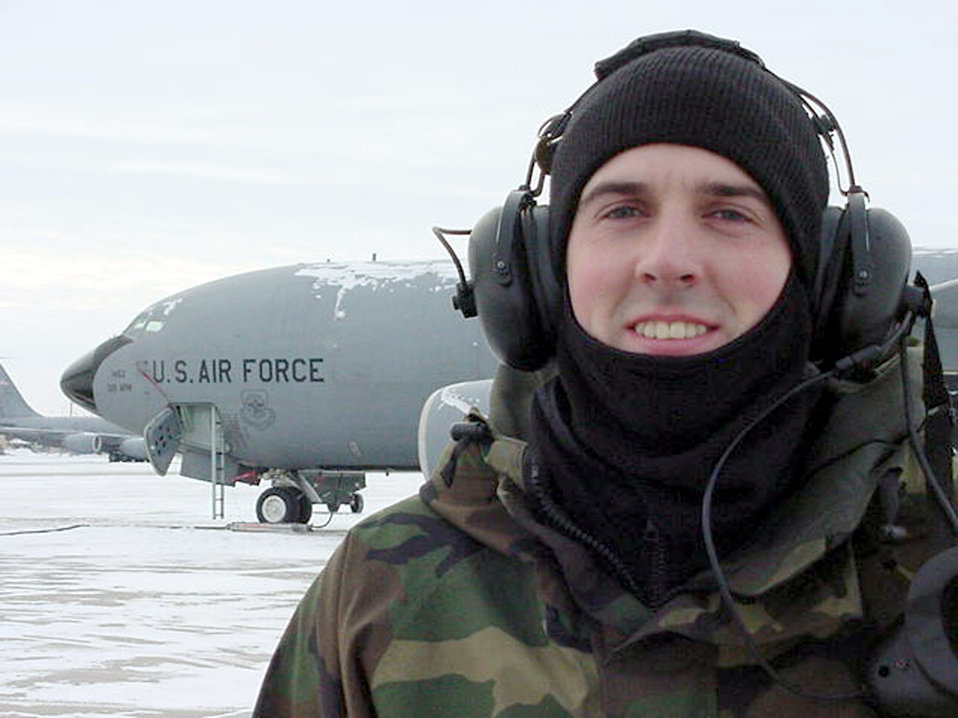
Sub zero warrior

GRAND FORKS AIR FORCE BASE, N.D. (AFPN) -- Senior Airman Jared Currie is one of more than 120 maintenance people on the flightline here every day braving the cold. Airman Currie is a crew chief with the 319th Aircraft Maintenance Squadron.